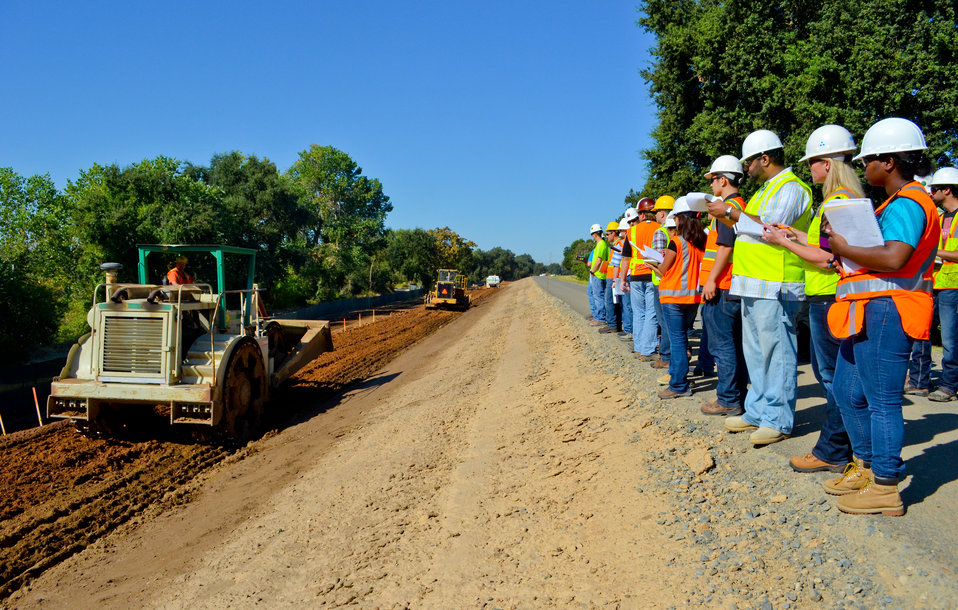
Sacramento State seniors study Howe Ave. levee raise project

Approximately 30 Sacramento State University construction management seniors observe levee construction operations Sept. 7, 2012 at the Corps’ Howe Avenue levee raise project near the American River in Sacramento, Calif.
The class is measuring the time spent removing and delivering levee materials and the types of equipment being used to raise and reinforce more than 4,000 feet of levee by the end of October.
The project is part of the American River Common Features project, a joint flood risk reduction effort between the U.S. Army Corps of Engineers Sacramento District, the state’s Central Valley Flood Protection Board/Department of Water Resources and the Sacramento Area Flood Control Agency.